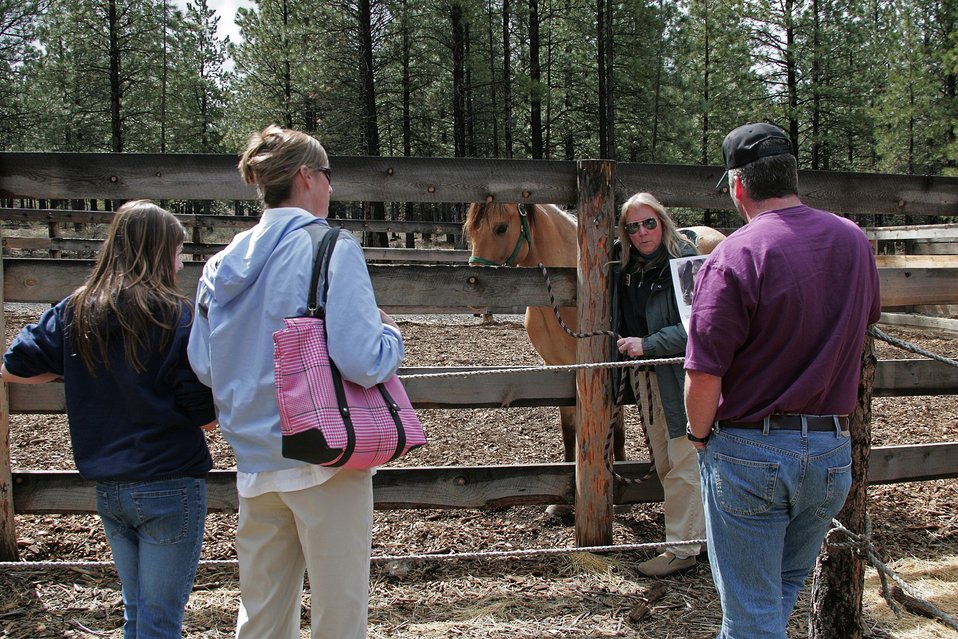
Karen Green, Public Affairs at the High desert Museum, talks with potential bidders on Spirit, a wild mustang from the Kiger Wild Horse Herd Management Area in eastern Oregon.